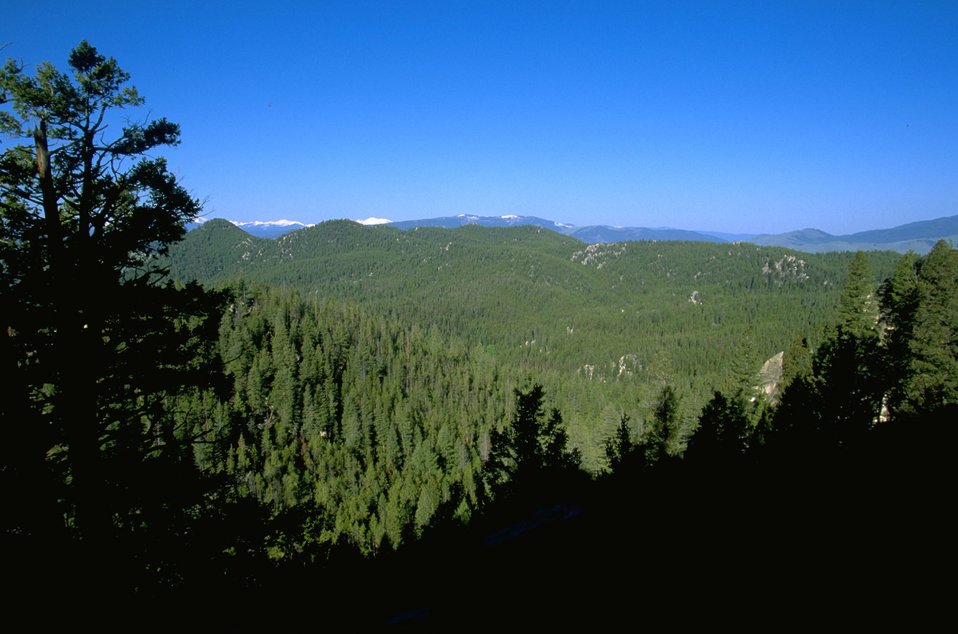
Looking down on the forests of Humbug Spires Wilderness Study Area